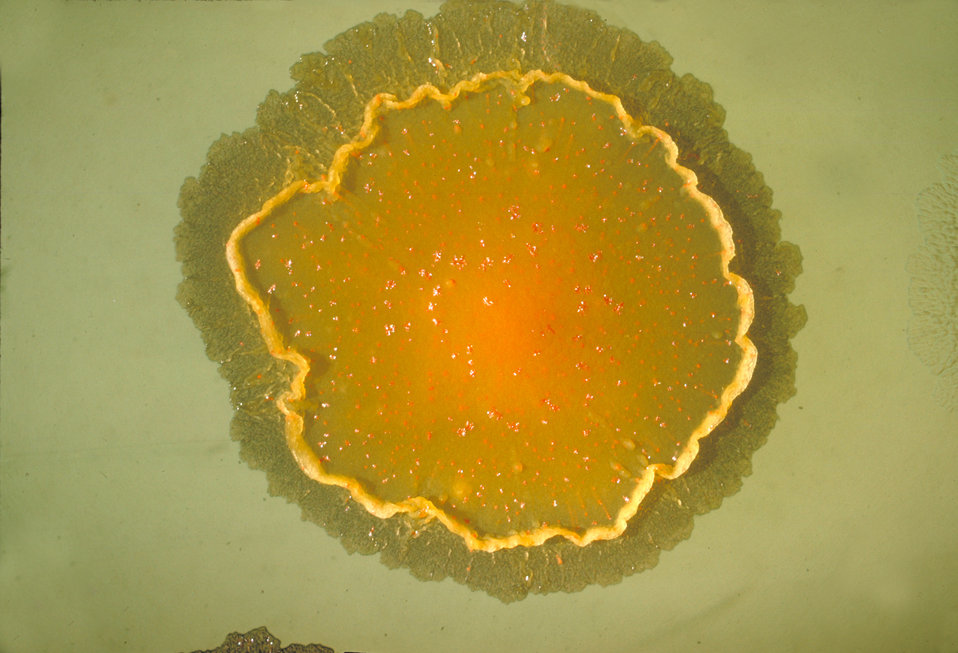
This plate culture grew a smooth colony of Mycobacterium balnei with red pigment, silver fringe and peripheral flange.